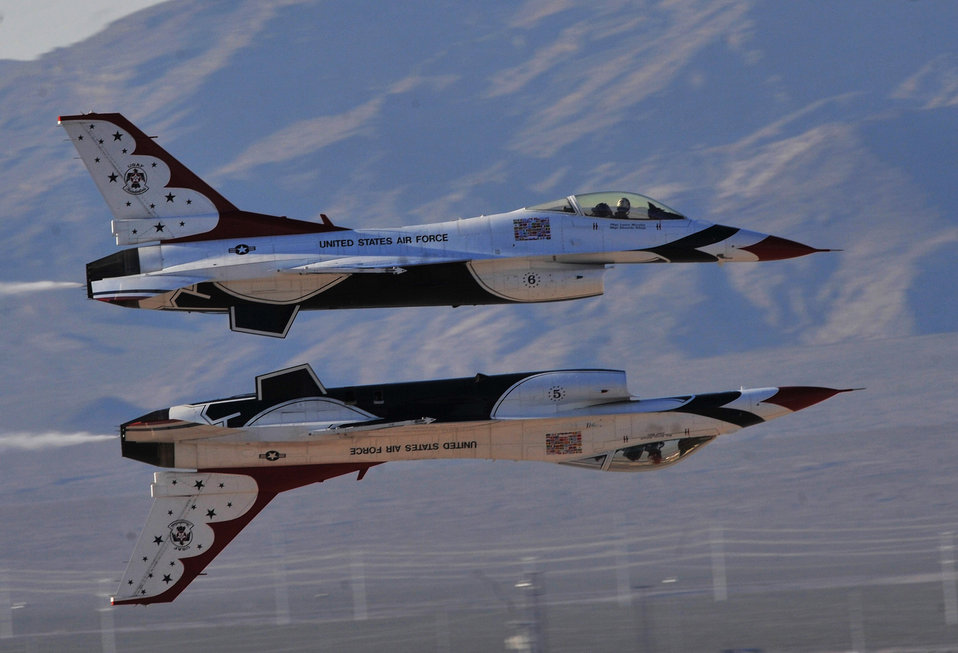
Seeing double

Members of the United States Air Force Air Demonstration Squadron Thunderbirds execute opposing solos while demonstrating the calypso pass Nov. 12, 2011, during the 2011 Aviation Nation Nellis Open House at Nellis Air Force, Base, Nev. The Nellis Open House is an opportunity for the Las Vegas community to view aerial demonstrations and static displays of various military aircraft. The open house is also the final air show of the year for the Thunderbirds.